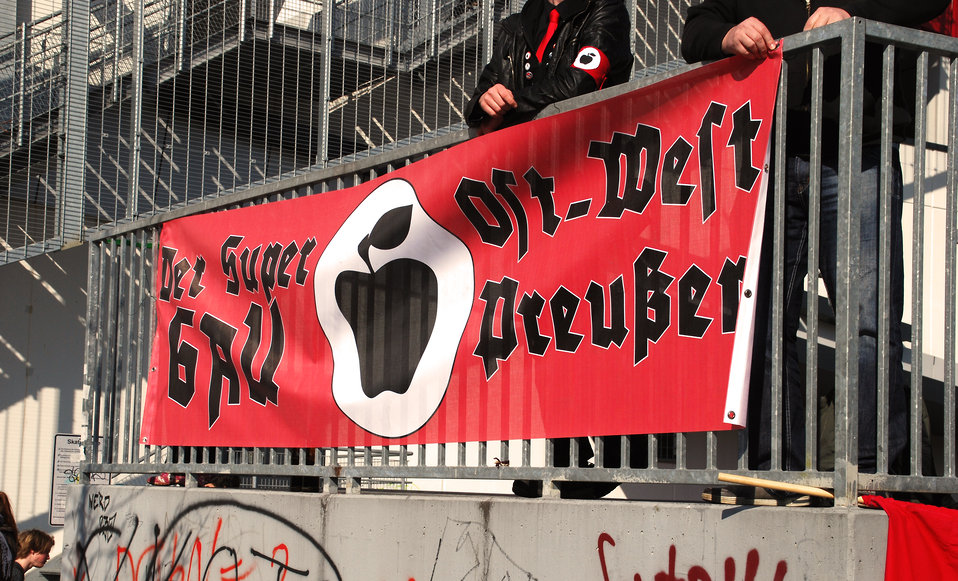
Deutsch: Proteste gegen den Nazi-Aufmarsch am 24.3.2012 in Frankfurt (Oder). Transparent der Front Deutscher Äpfel